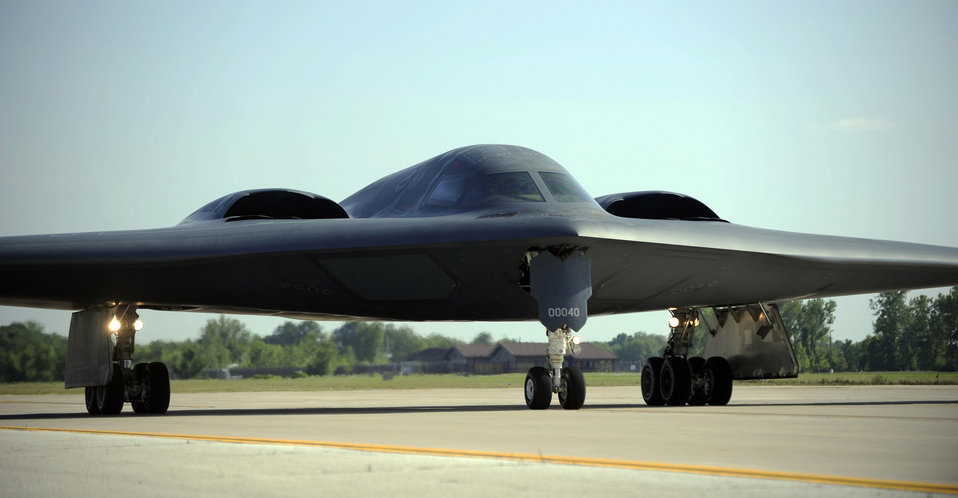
That's the Spirit!

A B-2 Spirit taxis onto the flightline July 14, 2011, at Whiteman Air Force Base, Mo., ending a week-long surge that tested Whiteman AFB's ability to hot-pit refuel the B-2 while continuously generating sorties. Active duty Airmen, guardsmen and reservists participated in the surge.